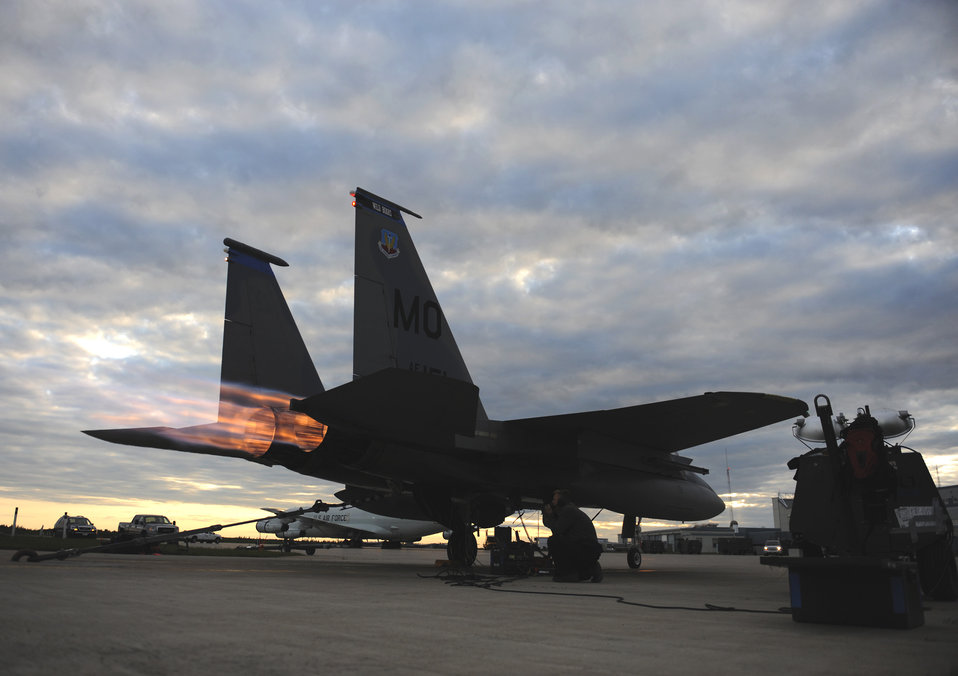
Kicking in the afterburner

A maintainer with the 366th Maintenance Squadron at Mountain Home Air Force Base, Idaho, conducts an afterburner run test during a maintenance inspection on an F-15C Eagle June 9 while at Exercise Maple Flag 42 at Cold Lake, Canada..